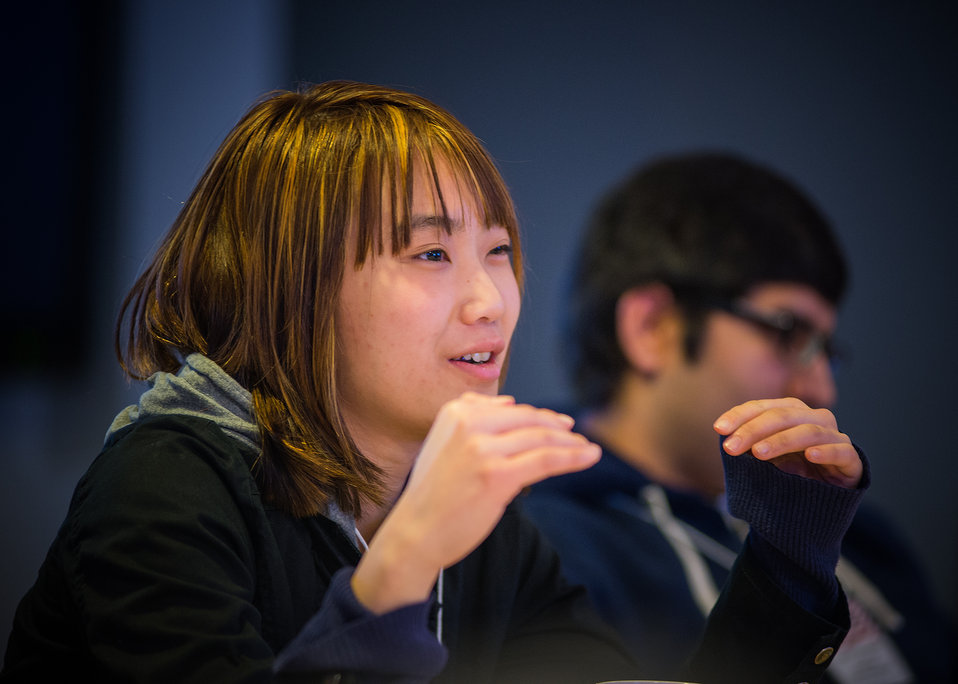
Thai Le, a student from Thomas Jefferson High School of Science and Technology in Alexandria, VA poses a question during the U.S. Department of Agriculture (USDA), Office of the Chief Information Officer (OCIO) IT Job Shadow Day, Tuesday, Mar. 25, 2014. The OCIO IT Job Shadow Day hosts students from local high schools in the Washington, D.C. area annually with IT professionals and agricultural specialists from a variety of mission areas at USDA.